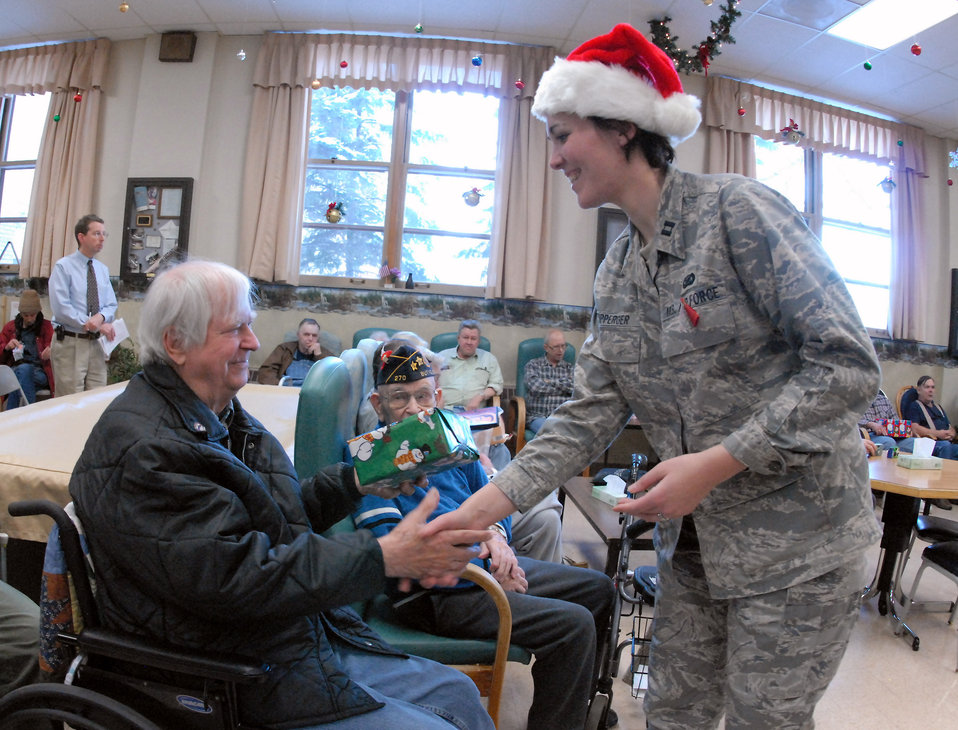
Airmen deliver Christmas

Capt. Penny Ripperger gives a Christmas gift to Navy veteran Howard Kvamme at the North Dakota Veteran's Nursing Home Dec. 10 in Lisbon, N.D. The gifts are given to veterans at the nursing home by the North Dakota Air and Army National Guard each December using funds raised through personal donations given by the North Dakota National Guard members. Captain Ripperger is the 119th Wing public affairs officer.